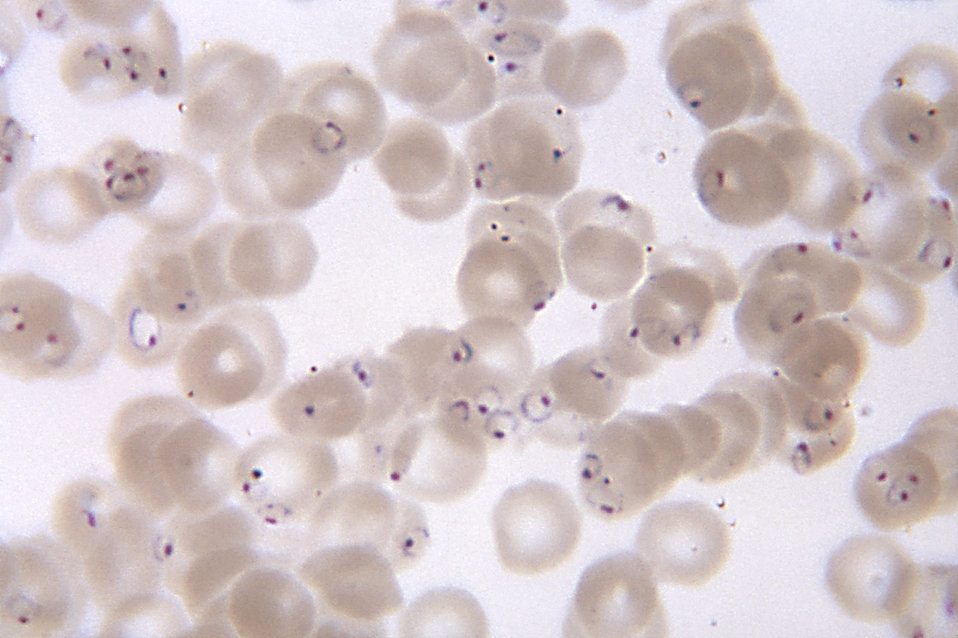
This blood smear micrograph revealed the presence of numerous P. falciparum rings form parasites; Mag. 1150X.